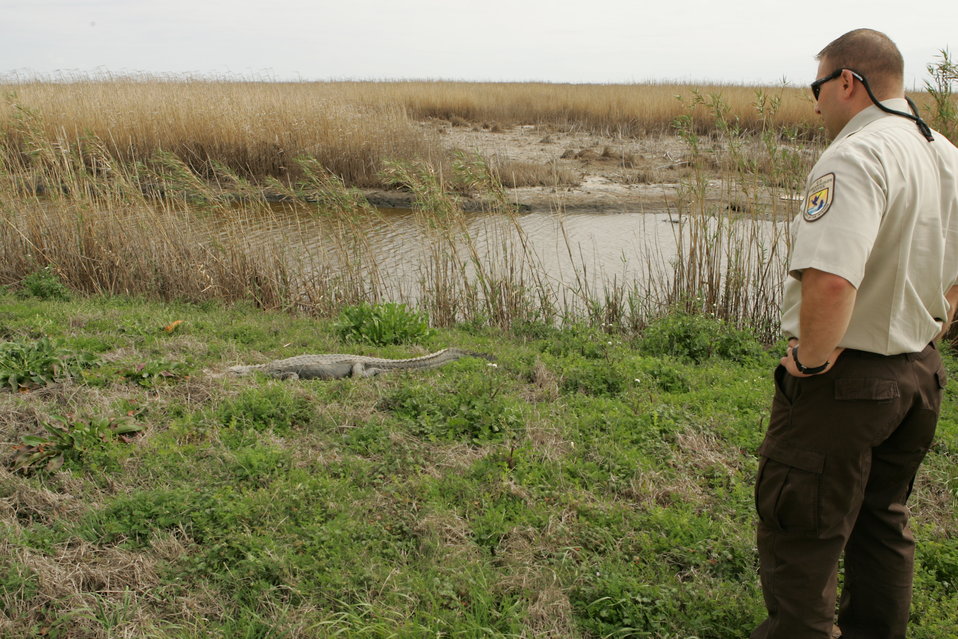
A healthy respect for this alligator!

Anahuac National Wildlife Refuge employee approaches this alligator with caution, always thinking safety first.